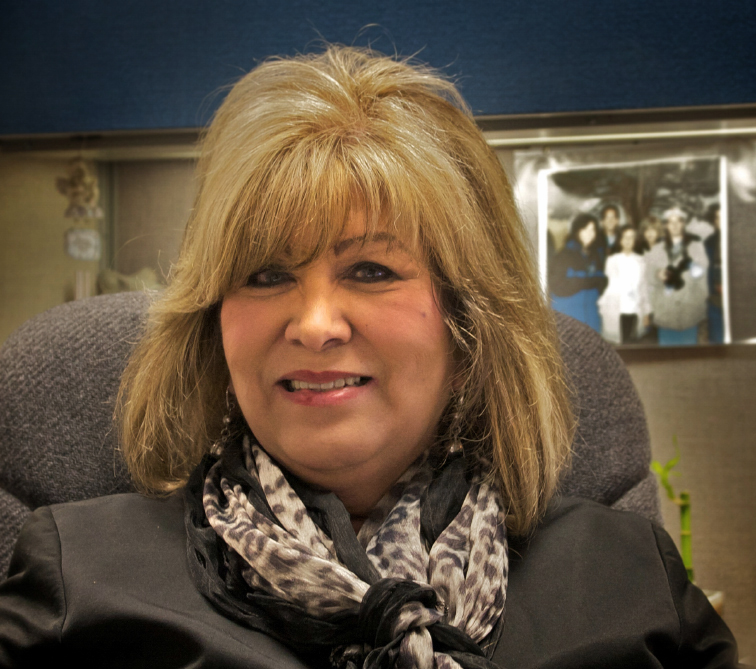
Rose Scott - URS Washington TRU Solutions LLC

Rose Scott, a governmental affairs specialist with URS Washington TRU Solutions LLC, the DOE Waste Isolation Pilot Plant management and operating contractor, was selected for the National Environmental Justice Advisory Board.
***
In April, representatives from federal and state agencies, local governments, tribes, communities, business, academia and other groups will gather in Washington, D.C. for the 2012 National Environmental Justice Conference and Training Program.

DOE is a founding partner and sponsor of the event, which was first held in 2007.

Melinda Downing, DOE Environmental Justice Program Manager, said the conference provides federal agencies an opportunity to present collaborative environmental justice efforts at the national level.
“During the conference, communities will have direct access to federal officials and members of Congress,” said Downing. “It’s the largest and most diverse environmental justice conference in the nation.”